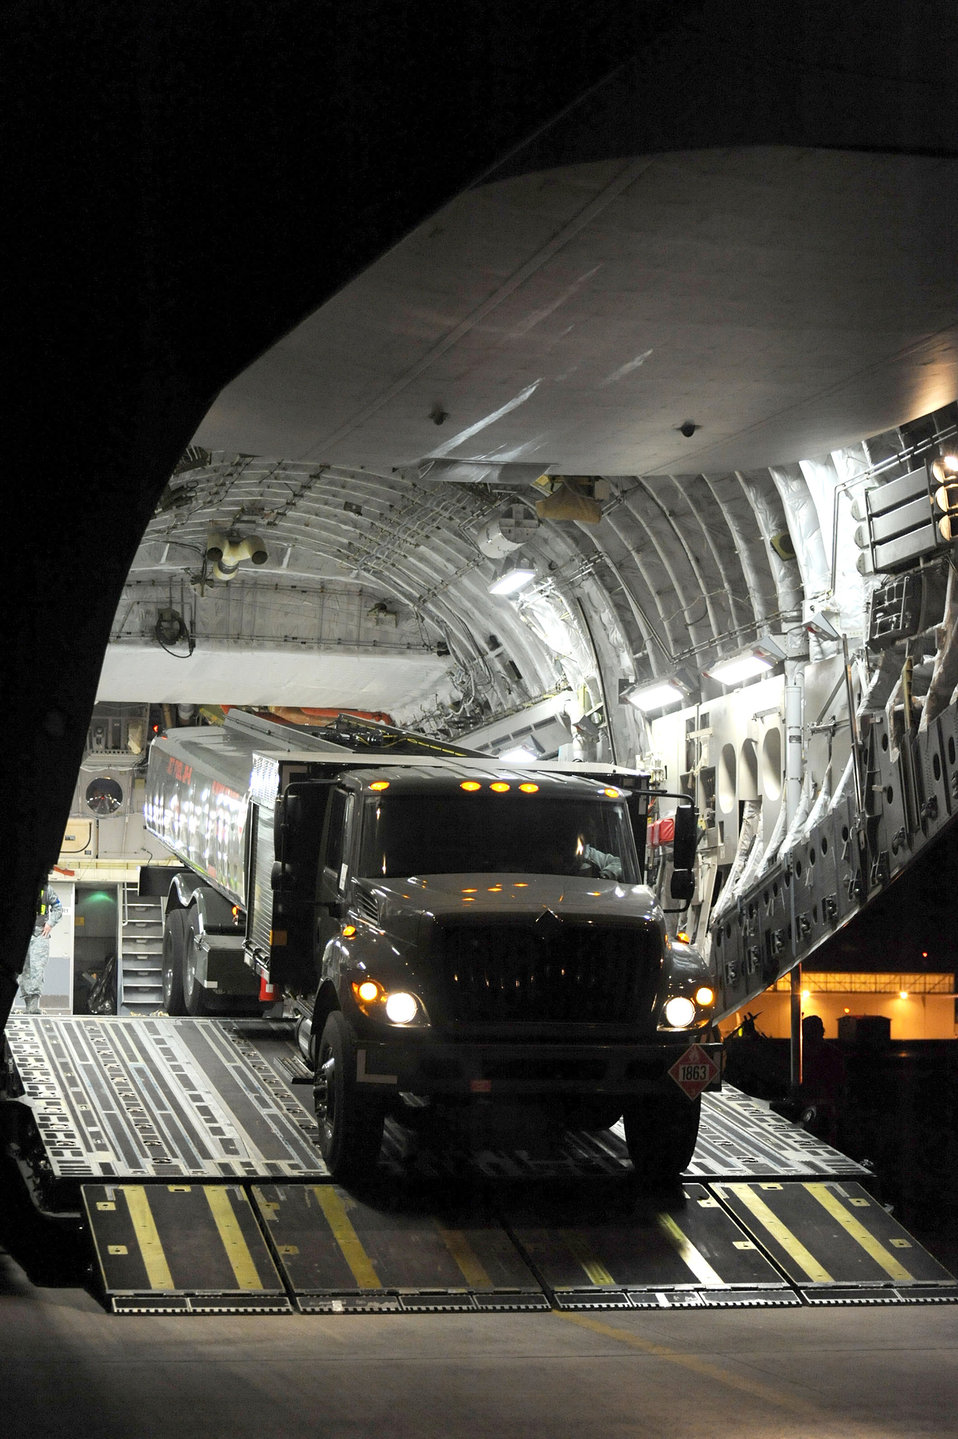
Refueling trucks

Loadmasters unload a refueling truck from a C-17 Globemaster III March 23, 2011, at Aviano Air Base, Italy, in support of Operation Odyssey Dawn.